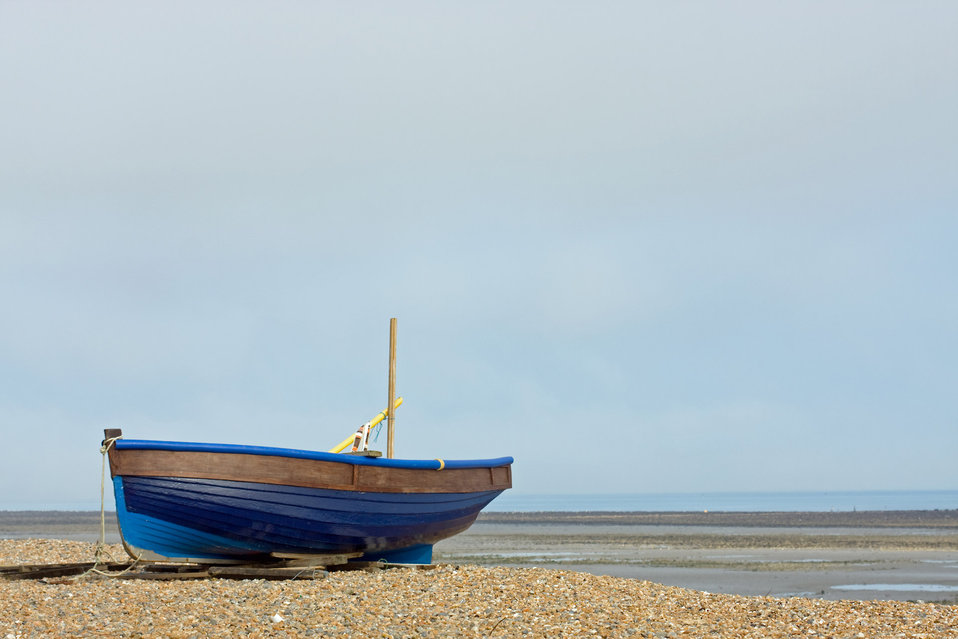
Blue fishing boat

Blue wooden fishing boat on the beach.